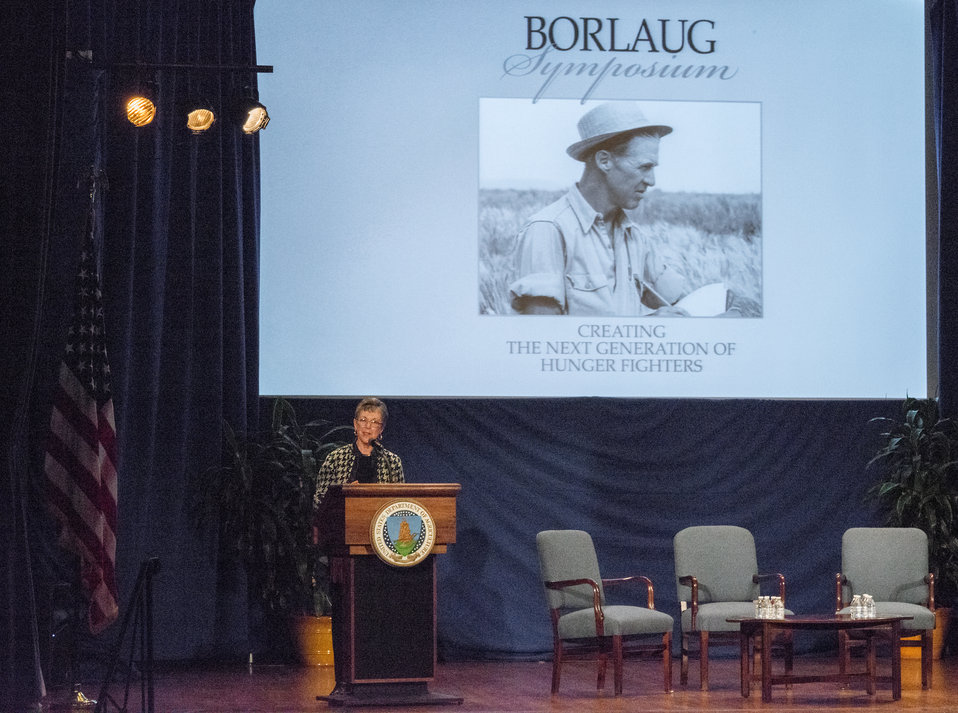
United States Department of Agriculture (USDA) Research, Education and Economics (REE) Under Secretary Dr. Catherine Woteki opens the Borlaug Symposium commemorating the late Dr. Norman Borlaug's 100th Birthday in the Jefferson Auditorium, USDA in Washington, D.C., on Tuesday, Mar. 25, 2014. The symposium highlights current efforts addressing global hunger. The symposium panels will feature high school and university students, as well as, scientists and policy advisors from the U.S. Agency for International Development (USAID), USDA and Non-Governmental Organizations (NGO). Questions from students and interns are given priority to panelists. Lightening presentations will have leading students and individuals present what they are doing to help achieve Dr. Borlaug’s vision of creating the next generation of hunger fighters.
The symposium was planned in partnership with:USAID, Cornell University, Iowa State University, University of Minnesota, The Norman Borlaug Institute for International Agriculture, Texas A and;M University, and the World Food Prize.